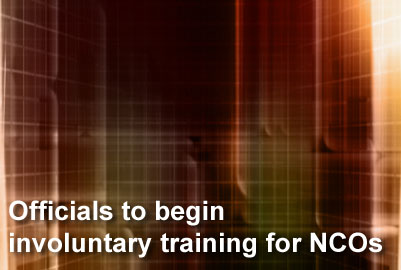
Officials to begin involuntary training for NCOs

More than 300 additional Airmen are needed to retrain to ensure all Air Force career fields are equally manned. Phase II, which identifies non-volunteers for retraining, begins Dec. 14. Airmen have until Jan. 22, 2010, to submit a completed retraining package for the Air Force specialty code for which they are selected.